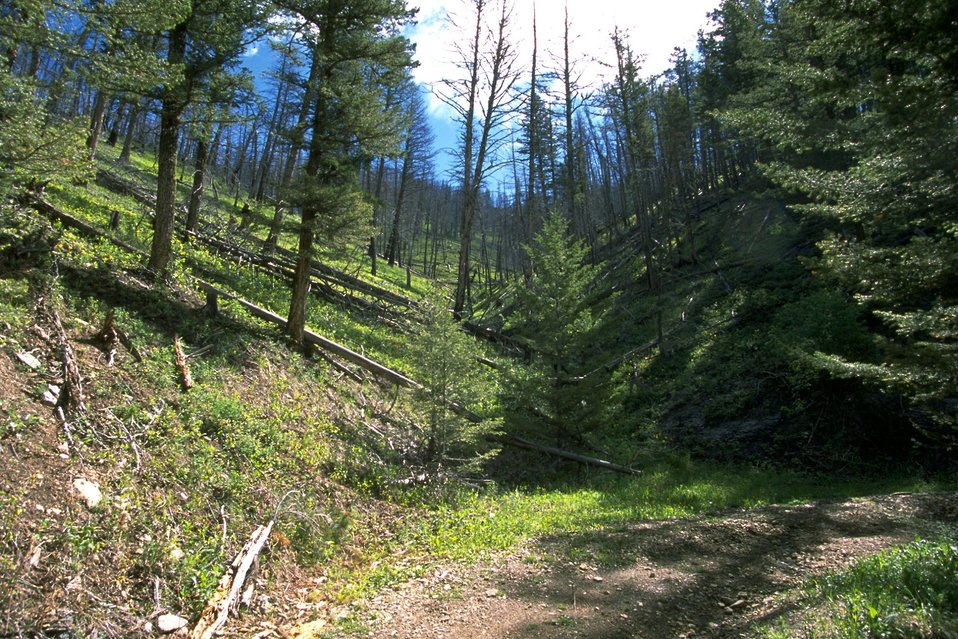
An old burn area in the Judith Mountains